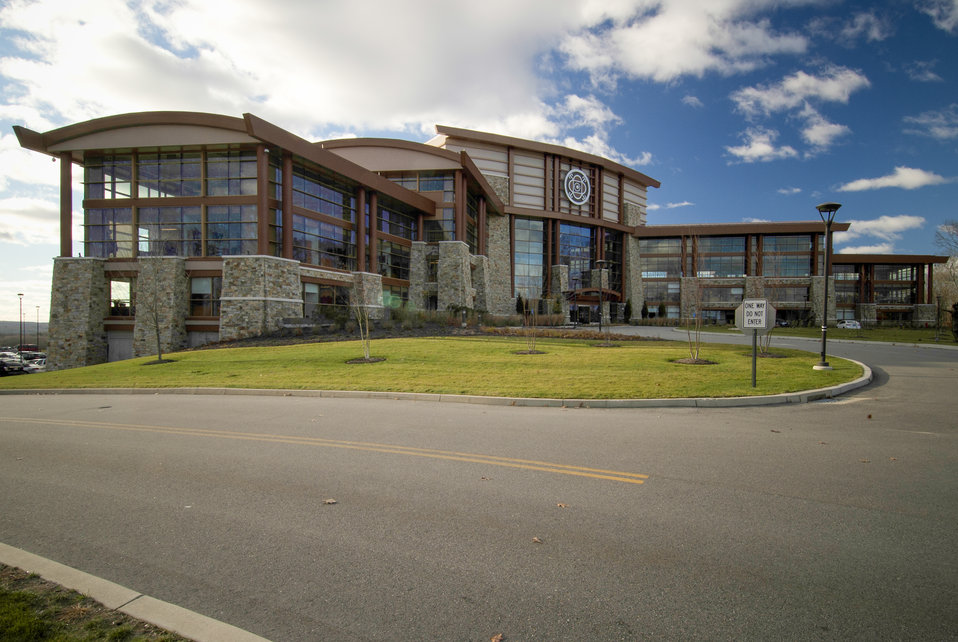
A U.S. Department of Agriculture (USDA) Rural Development (RD) Community Facility Loan was provided to the Mohegan Tribe for the construction of the Mohegan Tribe Community Center and Government Building in Uncasville, CT. USDA’s RD Community Facilities Programs makes and guarantees loans to develop essential community facilities in rural areas and towns of up to 20,000 in population. Loans and guarantees are available to public entities such as municipalities, counties, parishes, boroughs, and special-purpose districts, as well as to non-profit corporations and tribal governments. These funds can be used to construct, enlarge, or improve community facilities for health care, public safety, and public services. The Mohegan Tribe's newly completed Community Center and Government Building allows the tribal government to more fully and effectively administer the tribal government, health, housing and social programs of the Tribe and provide cultural resources and community gathering, and activities for its members. The 160,000 square foot building Center hosts an exhibit celebrating federal recognition, history of Mohegan Chiefs, a new Library and Archives space, new Arts and Crafts room, a new gymnasium, and a new community room to enjoy food and family. The Center will continue the Tribe’s plan for growth and meeting the needs of its members. The ability to finance the project at reasonable rates through the USDA RD Community Facilities Programs ensures that the Tribal government more efficiently and effectively can manage the administration of essential government functions.